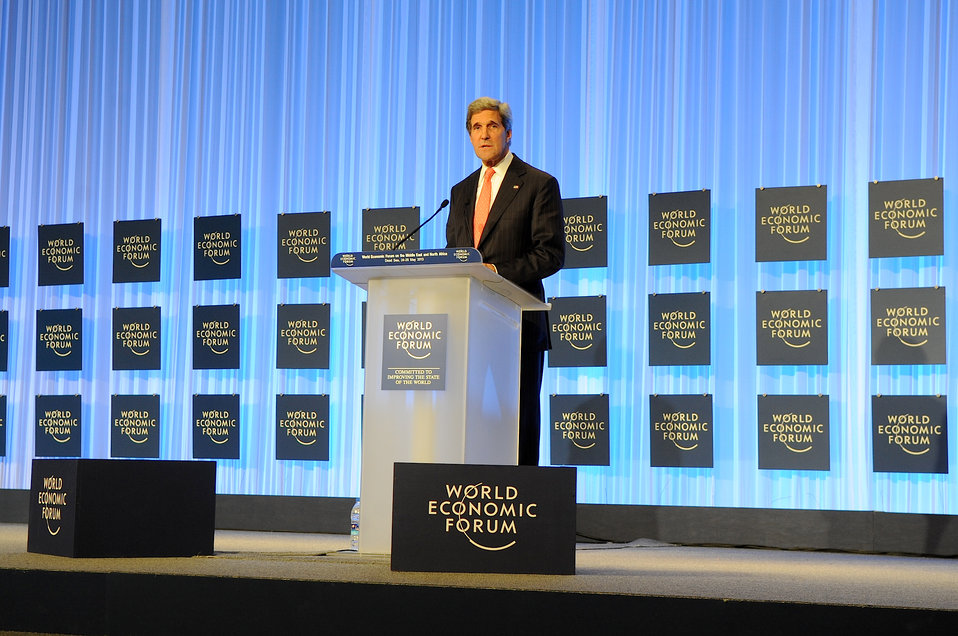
Secretary Kerry Attends the World Economic Forum

U.S. Secretary of State John Kerry addresses the closing plenary session of the World Economic Forum meeting in Dead Sea, Jordan, on May 26, 2013.